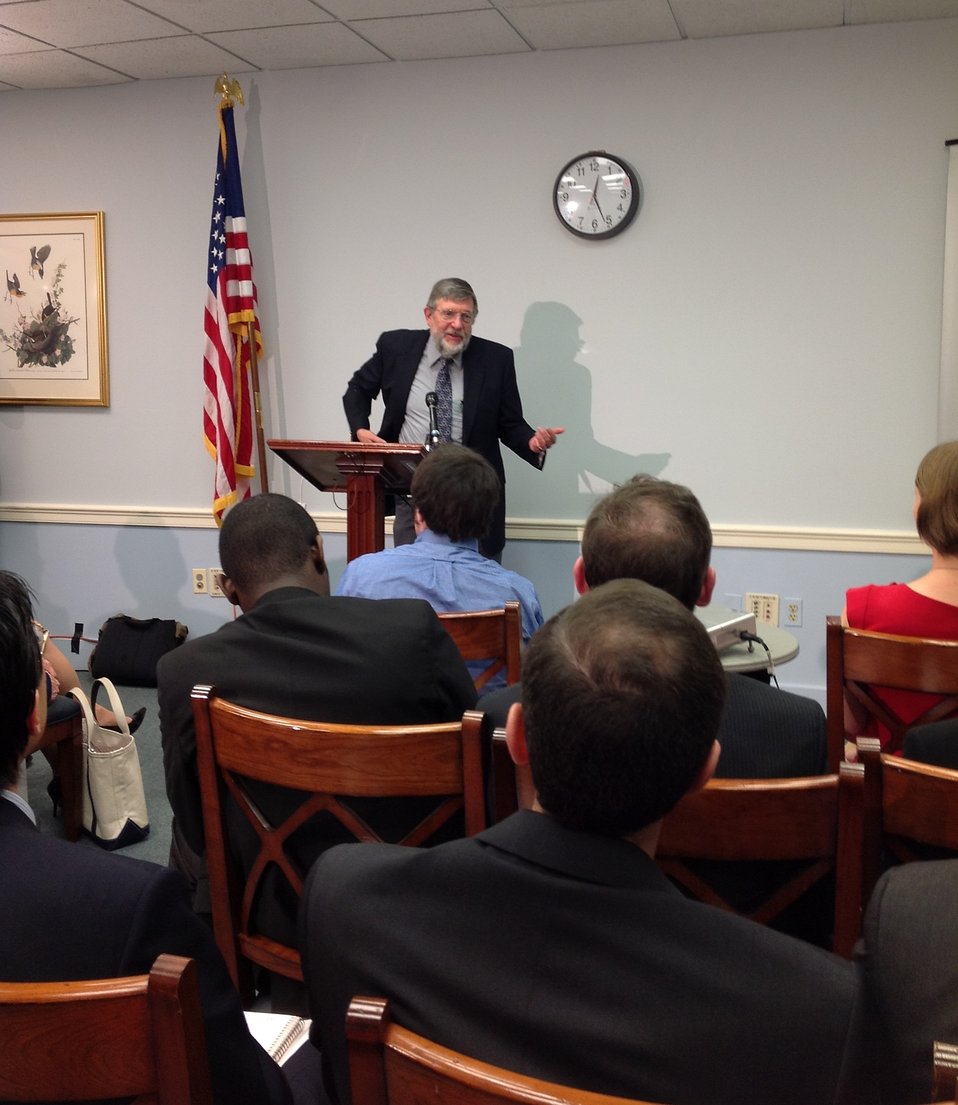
NIST Nobel Laureate Dr. Bill Phillips briefs Senate staffers on the role of basic research in driving innovation in the 21st century.